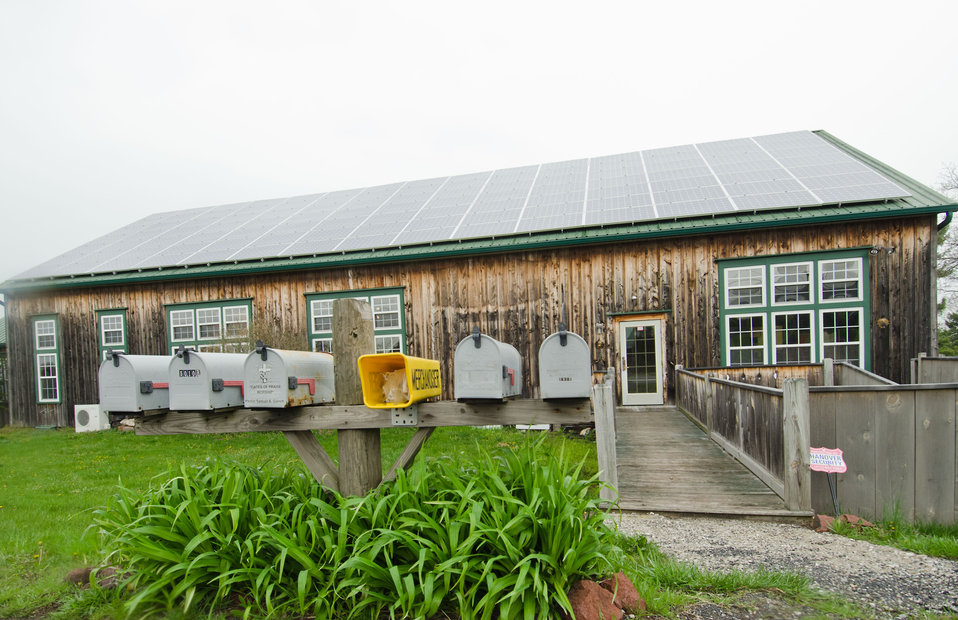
105 solar panels were installed at Littlestown Veterinary Hospital in Littlestown, PA, in mid September 2010. The Littlestown Veterinary Hospital in Littlestown, PA, received a grant from the U. S. Department of Agriculture, Rural Development under the Rural Energy for America Program (REAP) to have solar panels installed to help reduce their carbon footprint and to have cost effective electric power for the hospital. REAP provides grants for energy audits and renewable energy development assistance. The program also provides funds to agricultural producers and rural small business to purchase and install renewable energy systems and make energy efficiency improvements. The expected cost savings using solar power for the hospital’s electrical needs is expected to reduce the facility’s operating expenses by 30%-40%.